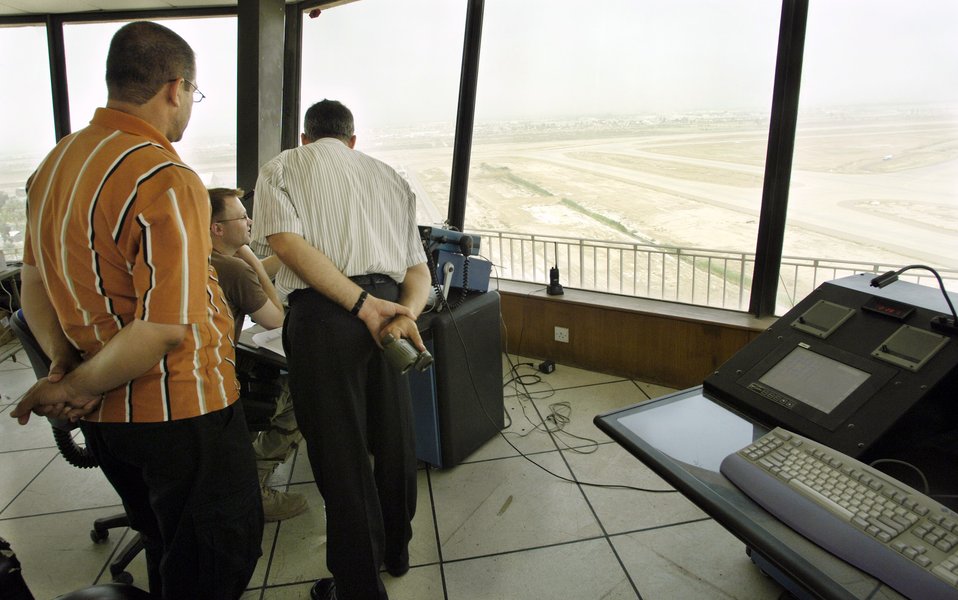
Airmen, Iraqi air traffic controllers work together

Staff Sgt. William Ferguson (seated at console) explains parking procedures for international flights coming into the Baghdad International Airport to Iraqi air traffic controllers June 2. In addition to manning the control tower and improving the infrastructure and technology in the tower, Air Force controllers are working with Iraqi controllers in an effort to speed the transition from U.S. to Iraqi control of airspace. Sergeant Ferguson is deployed from the Wyoming Air National Guard in Casper, Wyo.